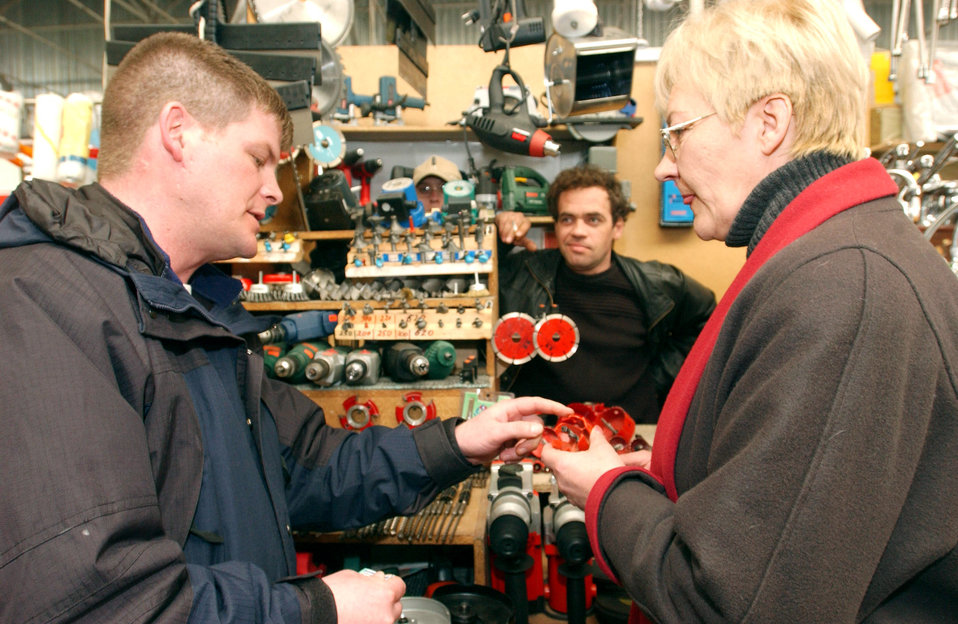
Deployed teams purchase supplies, services

OPERATION ENDURING FREEDOM -- A Kyrgyz vendor at Komfort Market in Bishkek, Kyrgyzstan, looks on as Staff Sgt. John Fife (left) and interpreter Natalia Klesova discuss the purchase of cut-out drill bits for Ganci Air Base's 376th Expeditionary Civil Engineer Squadron. Fife is assigned to the base's 376th Expeditionary Contracting Squadron.